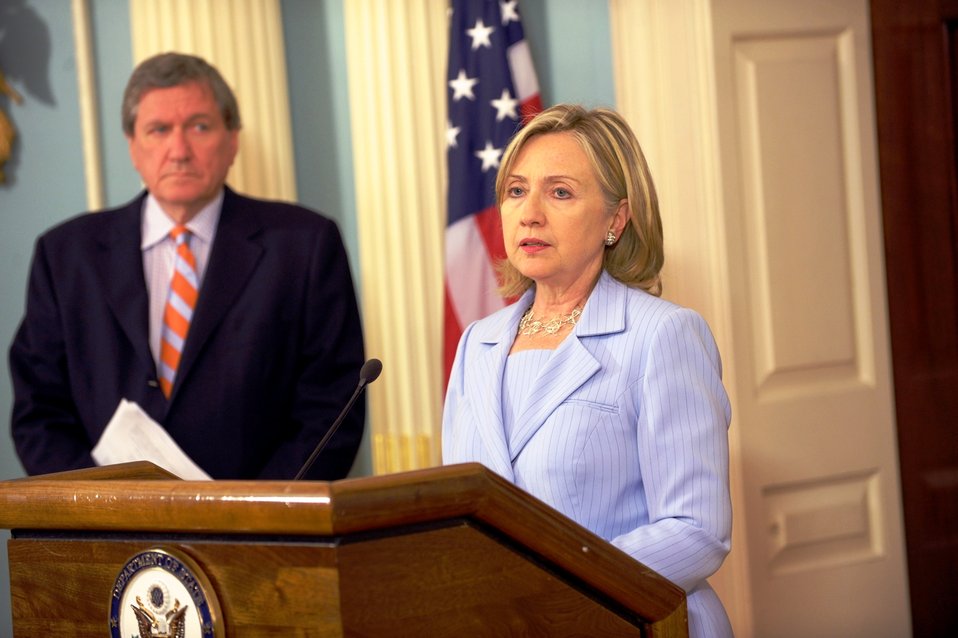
Secretary Clinton With Special Representative Holbrooke Delivers a Statement on the Relief Workers Killed in Afghanistan

U.S. Secretary of State Hillary Rodham Clinton, with Special Representative for Afghanistan and Pakistan Richard C. Holbrooke, delivers a statement on the relief workers killed in Afghanistan at the U.S. Department of State in Washington, D.C., on August 9, 2010.